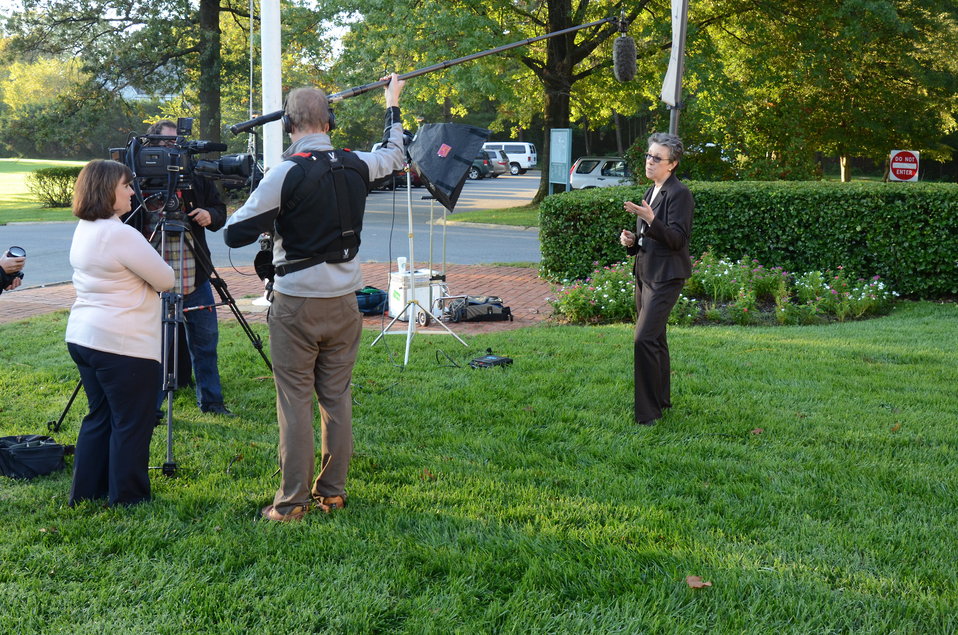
Dr. Catherine Woteki, Under Secretary for Research, Education and Economics is interviewed by the 4H Media Production Team on the 4H campus in Chevy Chase, MD, on Wednesday, October 5, 2011.